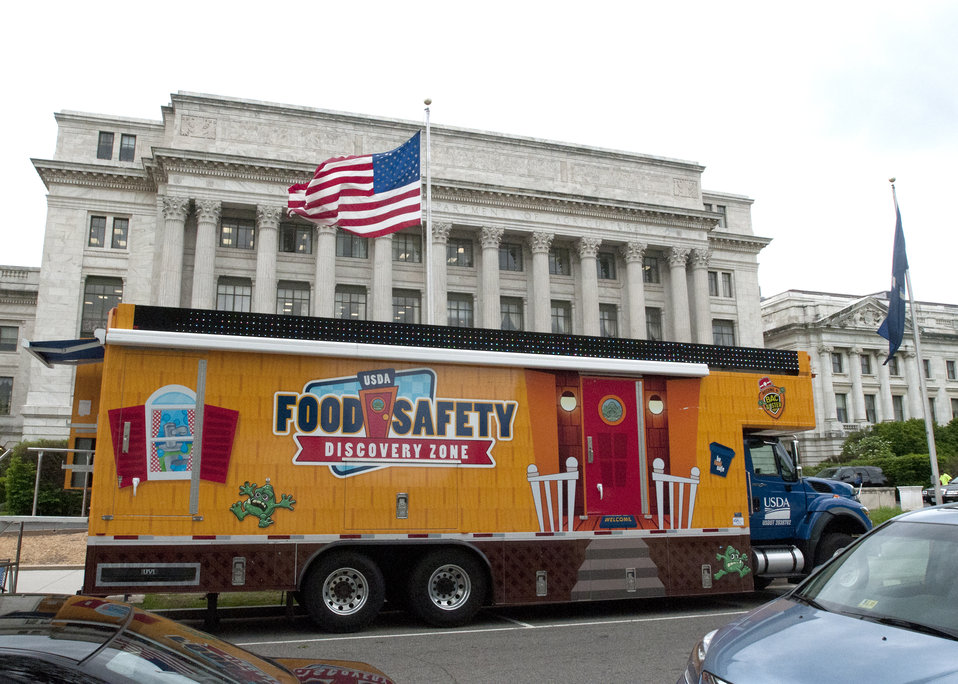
The Food Safety Discovery Zone is a 40-foot truck that features several hands-on, interactive activities, cool lighting and sound effects, and eye-catching educational tools to teach the four easy steps that families can take to avoid food borne illness. The truck was parked in front of the U. S. Department of Agriculture (USDA) as part of USDA’s “Take Your Child to Work Day” event held, in Washington, DC, on Thursday, April 28, 2011.